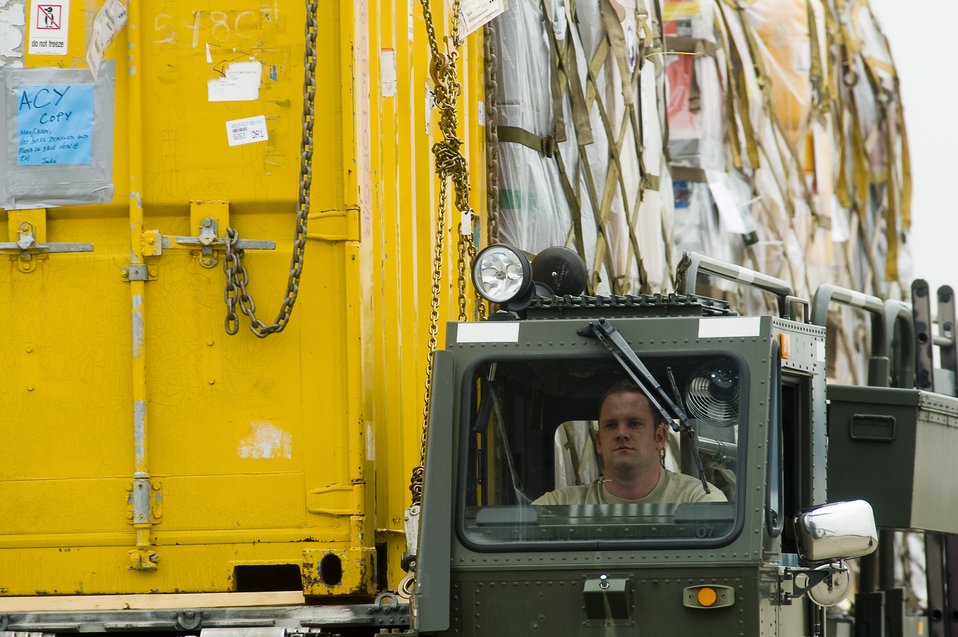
Deep Freeze